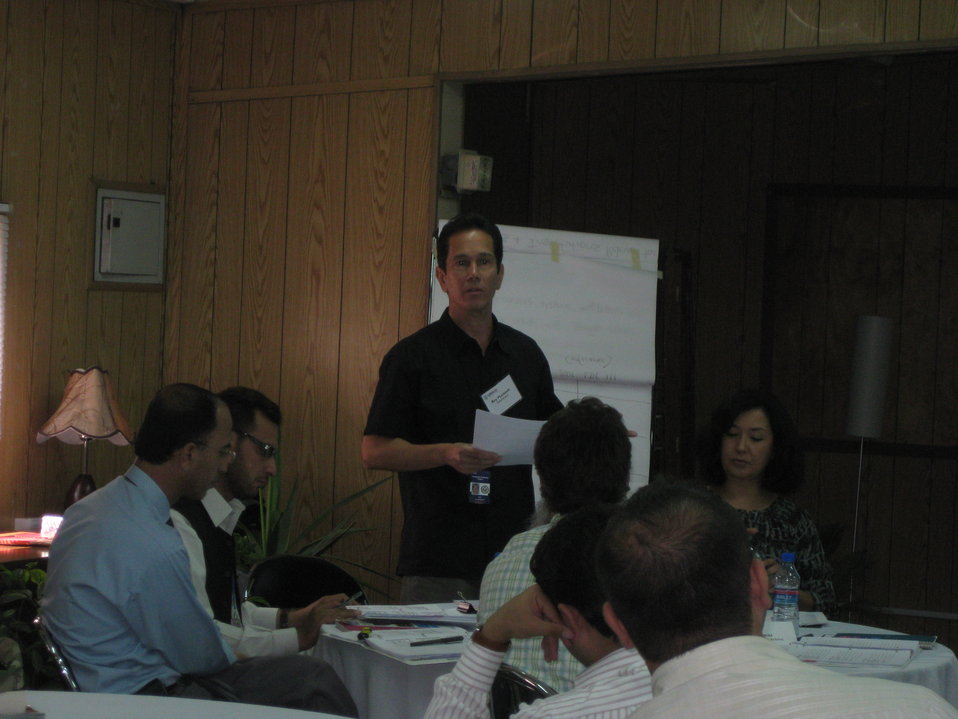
Afghan Youth Voices 022